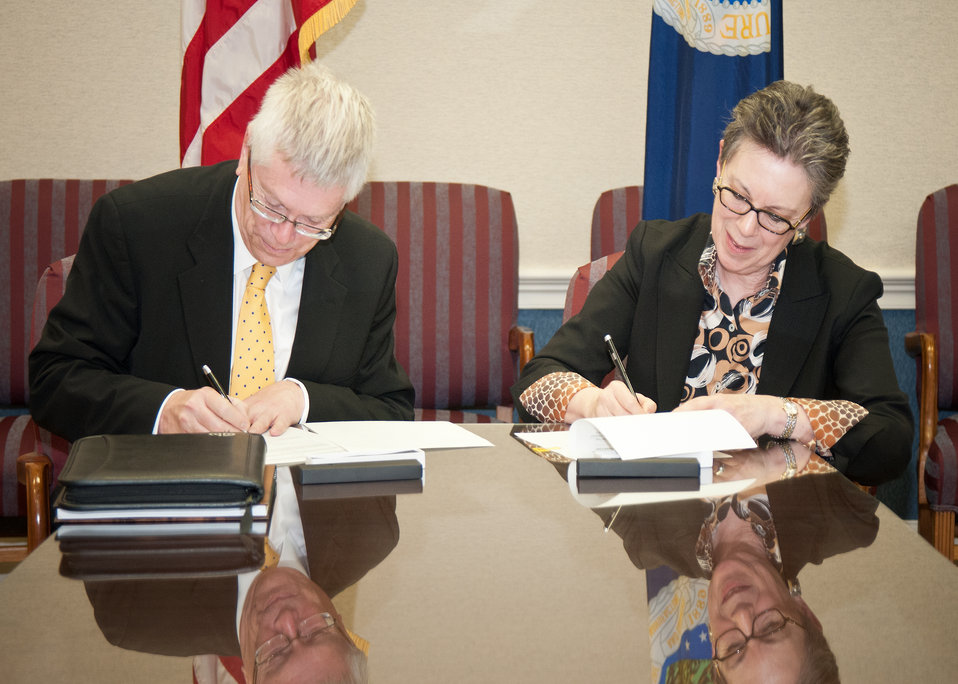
Trevor Nichols (left), Chief Executive Officer, Centre for Agricultural Bioscience CABI-Plantwise and Dr. Catherine Woteki (right), Undersecretary, Research Education and Economics signed a Memorandum of Understanding to make the United States Department of Agriculture’s research and genetic information accessible to “plant doctors” working to prevent disease and pests in developing countries at the United States Department of Agriculture in Washington, D.C., on Tuesday, February 7, 2012. In collaboration with local organizations, Plantwise has formed a network of 182 “plant clinics” in 16 countries around the world. Through the USDA-Plantwise partnership, the “plant doctors” at these clinics will have easier access to USDA research and education in order to help farmers in developing countries diagnose and control the plant pests and diseases affecting their fields.